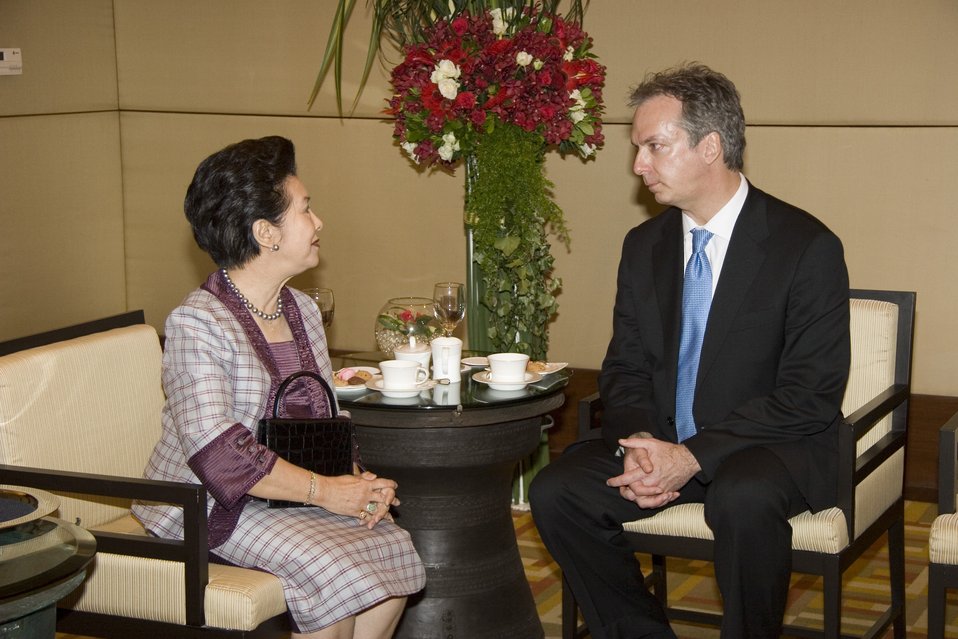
U.S. Ambassador to Thailand Meets With Thai Queen’s Lady-in-Waiting

U.S. Ambassador to Thailand Eric G. John meets with the Queen’s Lady-in-Waiting, Thanpuying Nravadi Chaixanien, at the Conrad Hotel in Bangkok, Thailand July 21, 2009.